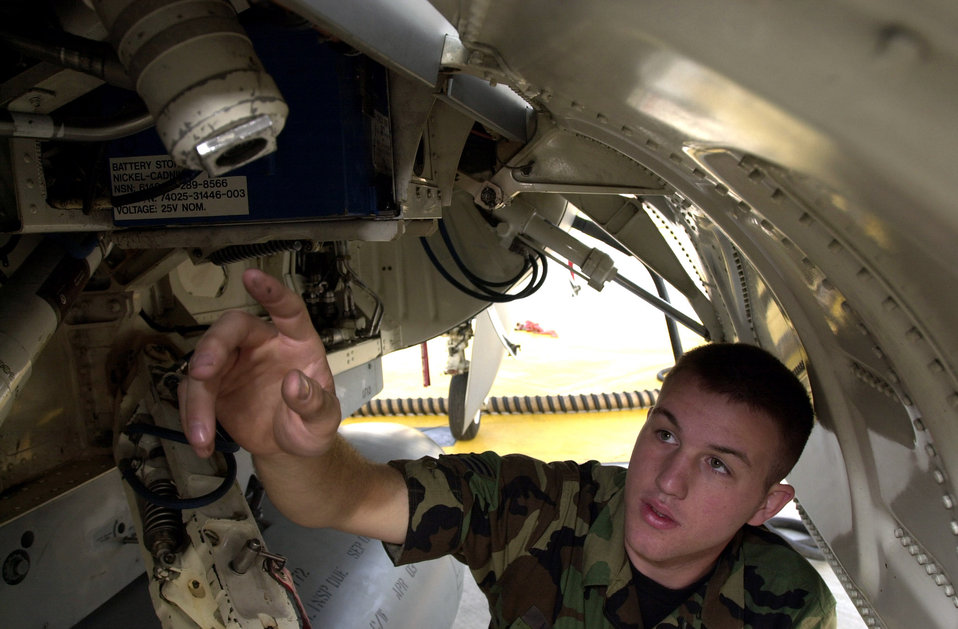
Flightline maintenance at Aviano Air Base

Senior Airman Paul Laspino breaks down the F-16 Fighting Falcon right wheel well at Aviano Air Base, Italy, in May 2003. The